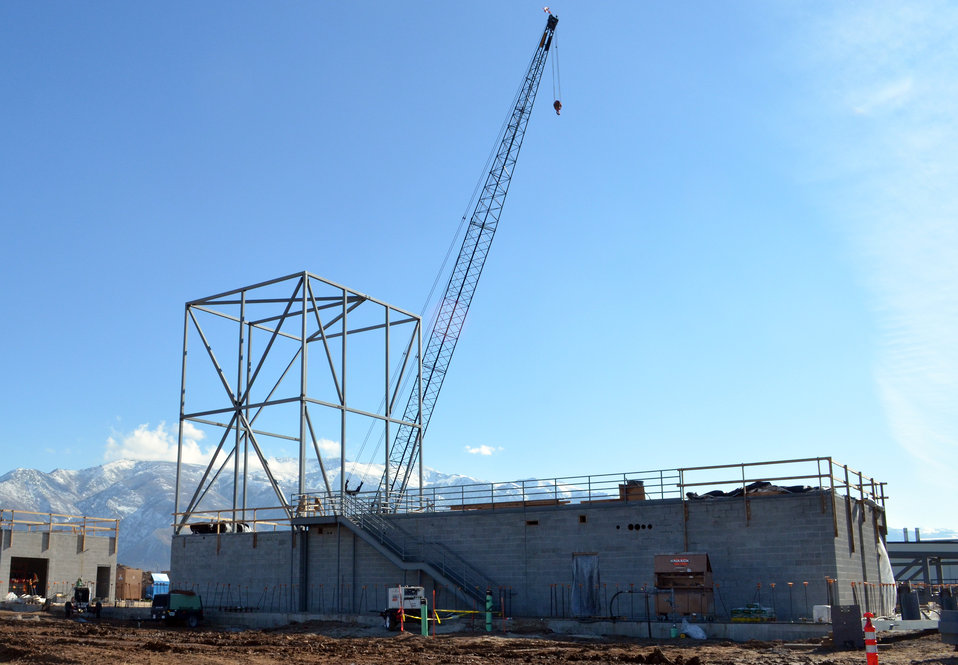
Turntable at Hill Air Force Base to test a different type of wave

Construction continues on the tower and administrative offices at the Radar Cross Section Test Facility project site at Hill Air Force Base, Utah, Nov. 16, 2011. A small tower within the facility will house a vertically movable antenna system, which will blast aircraft with radar to test its stealth capabilities. The VMAS can be adjusted for various aircraft including the F-22 Raptor fighter aircraft. The U.S. Army Corps of Engineers Sacramento District is overseeing construction of the $25.8 million project, scheduled for completion in February 2013.